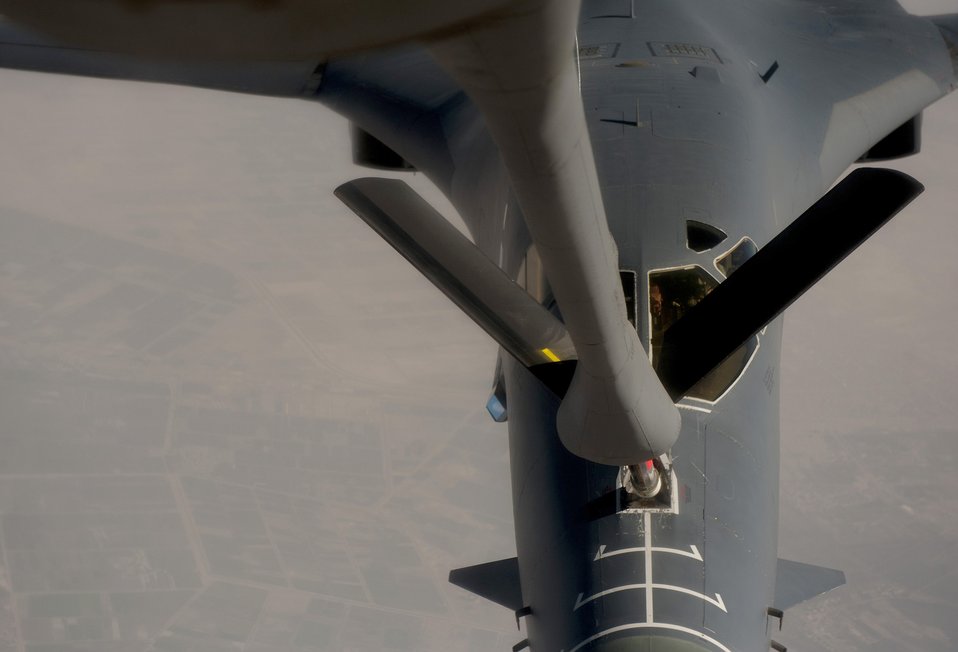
Operation New Dawn

A B-1B Lancer is refueled by a KC-135 Stratotanker Feb 26, 2011, above Iraq, in support of Operation New Dawn.